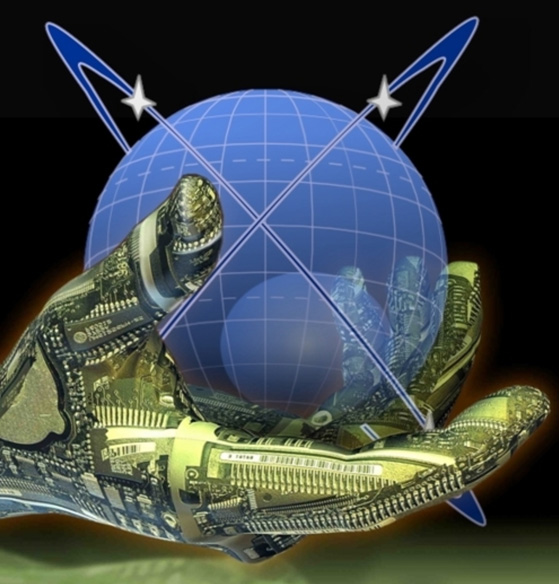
Cyberspace training at Edwards AFB, Calif.

Test Pilot School adds cyberspace training to its program.